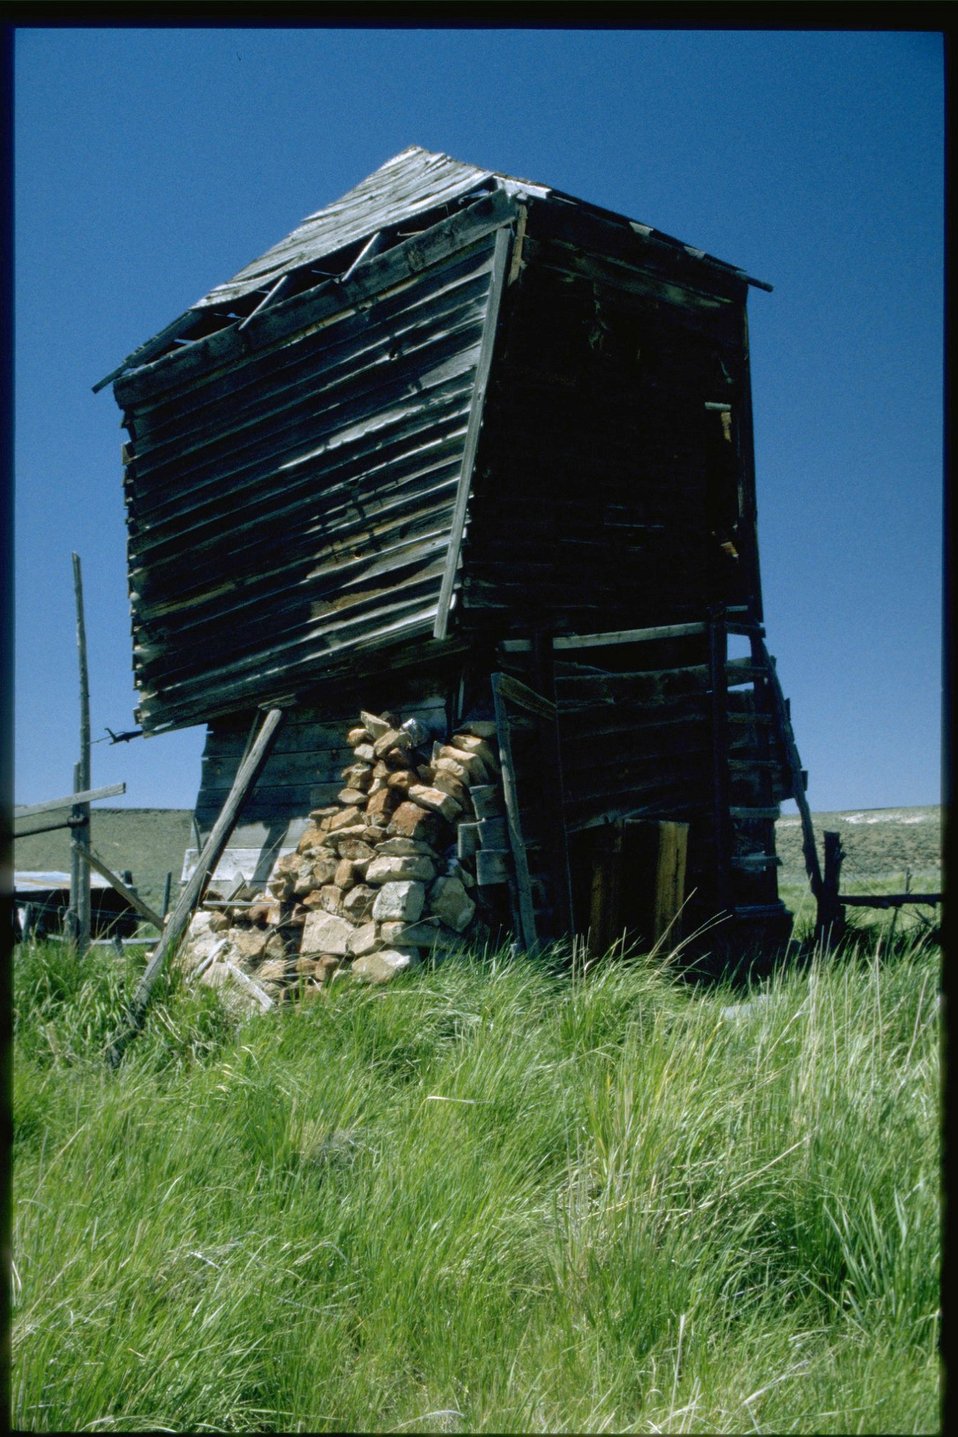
Shirk Ranch.